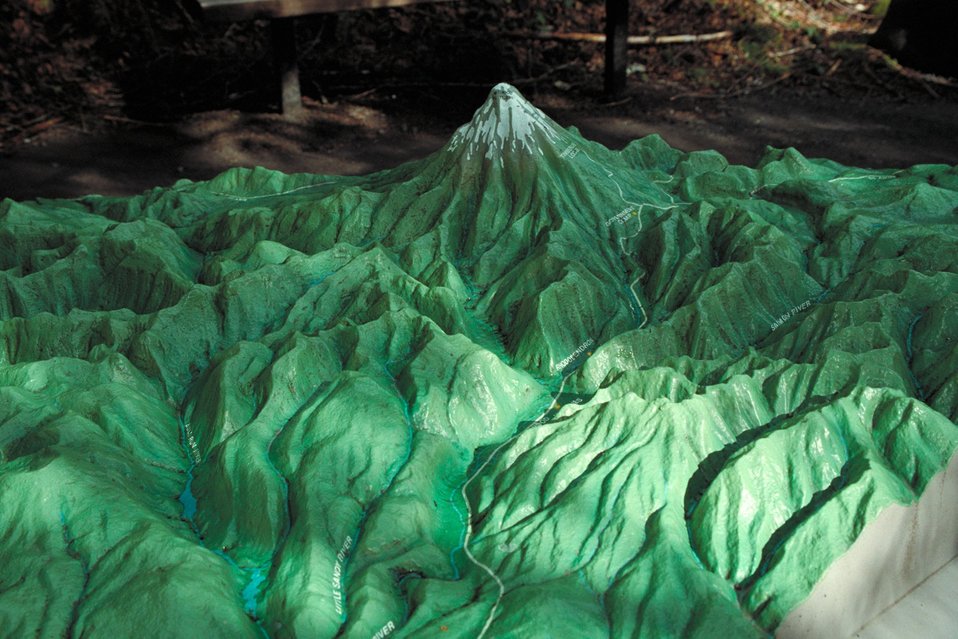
Cascade Stream Watch is an environmental education program conducted at BLM's Wildwood Recreation site.